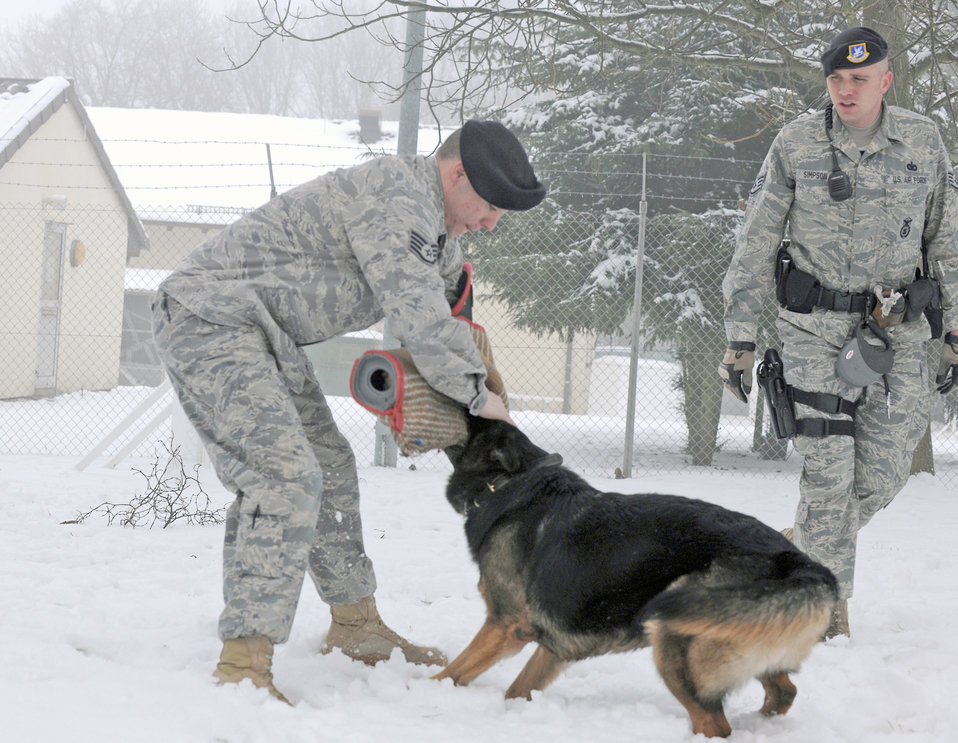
Military working dogs

Robson, a 5-year-old German shepherd, attacks as Staff Sgt. William Washer tries to escape during a training exercise Dec. 29, 2010, at the 52nd Security Forces Squadron military working dog facility at Spangdahlem Air Base, Germany. Handlers play and train with their dogs in the snow to help them acclimate to cold German winters and harsh conditions in which they must work. Sergeant Washer is a 52nd SFS military-working-dog handler.